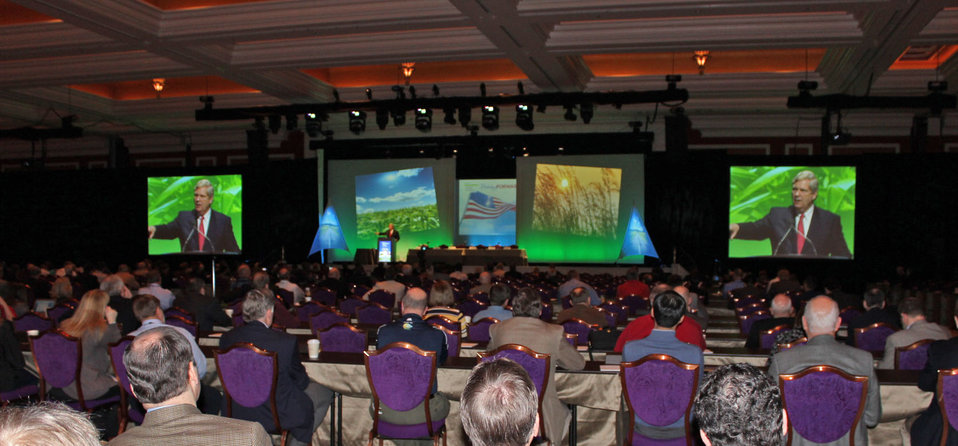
Agriculture Secretary Tom Vilsack makes remarks at the National Ethanol Conference 'Driving Forward' in Las Vegas, NV., on February 8, 2013.